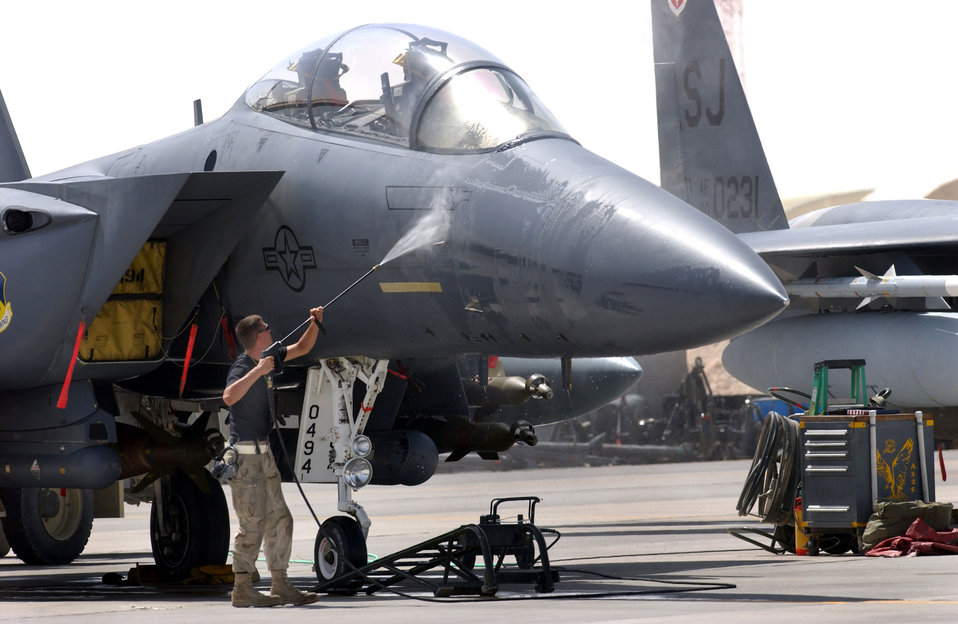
Clean Eagle

OPERATION IRAQI FREEDOM -- Airman 1st Class William Gilmer, a crew chief assigned to the 379 Air Expeditionary Wing, washed down a F-15E Strike Eagle at this dusty forward deployed location in the Gulf region in support of Operation Iraqi Freedom, April 5.